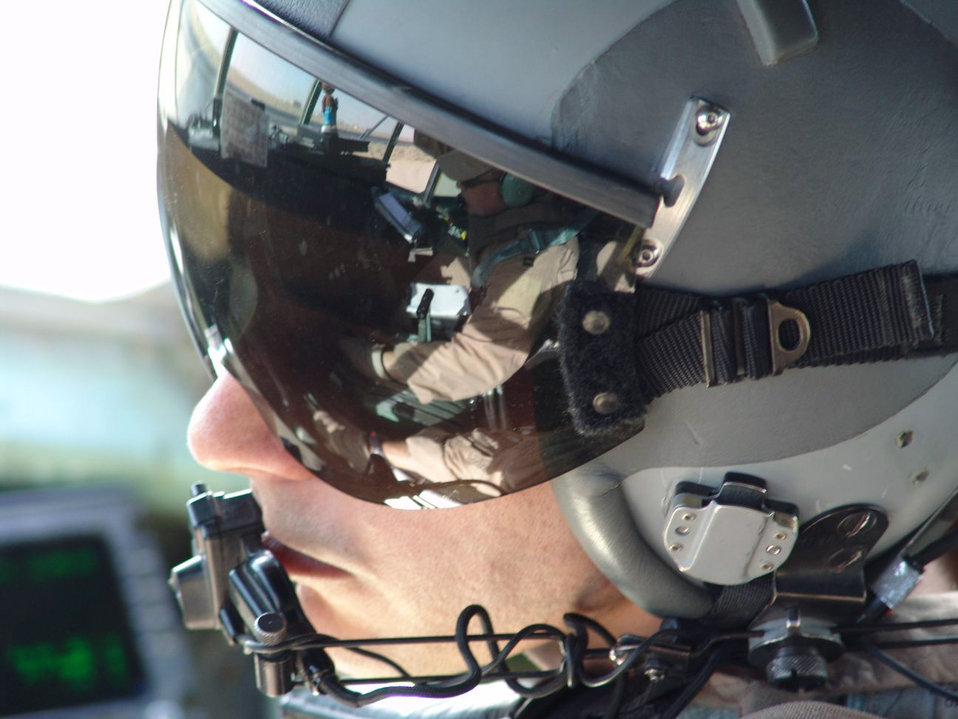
Pilot reflections

SOUTHWEST ASIA -- Capt. Douglas Curran, a C-130 Hercules pilot, waits for instructions from Capt. Tyler Kern, aircraft commander (seen in the reflection), before takeoff. They are assigned to the 737th Expeditionary Airlift Squadron at a forward-deployed location and are from Pope Air Force Base, N.C.